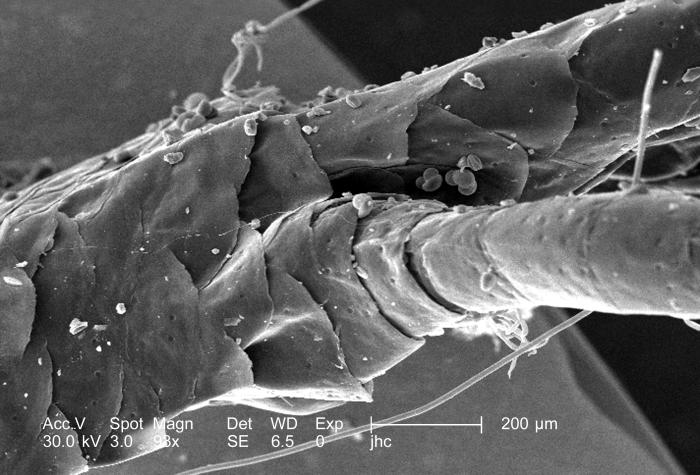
Photographed here under a low magnification of 98x, this scanning electron micrograph (SEM) depicted some of the external morphologic features of a deceased lizard's foot found desiccated on the suburban grounds of Decatur, Georgia. Note the armor-like appearance of the horny scaled exterior. The clawed morphology displayed by the reptile's foot closely reflects that displayed by birds as well.